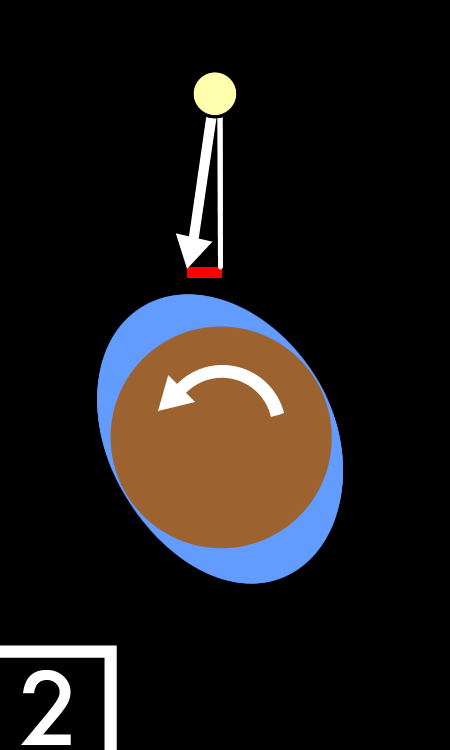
Second illustration of the affects of Luna on the tide of Terra.